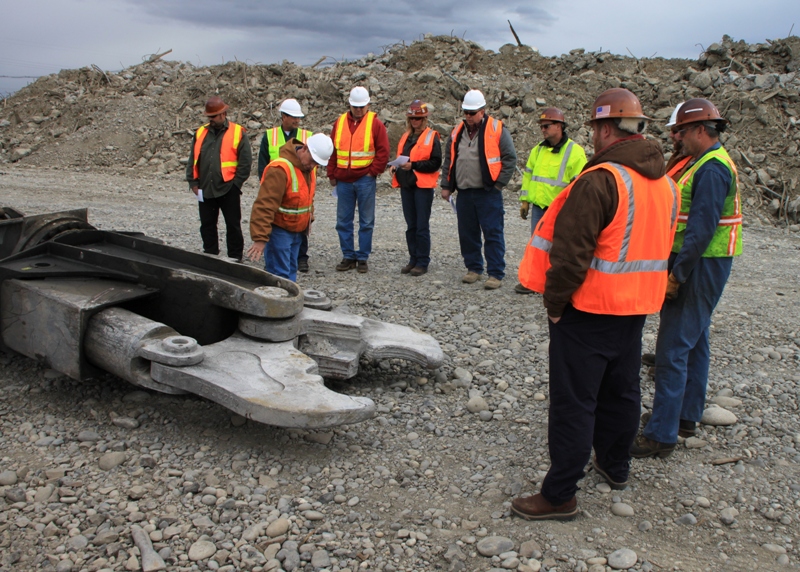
Stimulus jobs build skill sets, confidence

A team of crane operators is trained in the use of heavy equipment used to demolish structures at the Hanford Site.